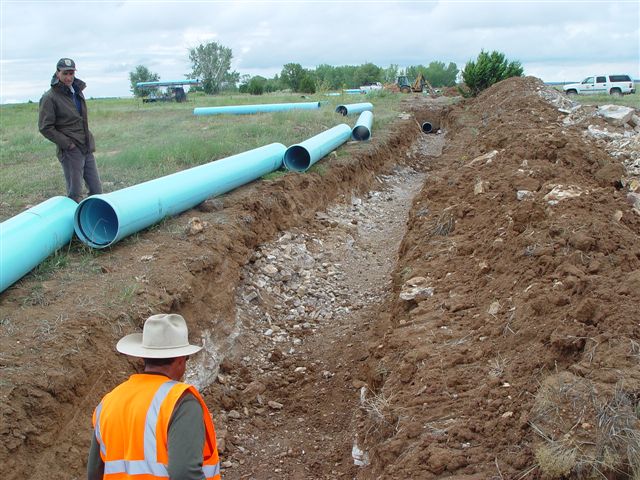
Las Vegas 4

U.S. Fish and Wildlife Service staff and workers from Albuquerque, N.M.-based Deerfield Corp. examine a ditch where new PVC pipes will be placed as part of a Recovery Act project rehabilitating a nine-mile water delivery system and pipeline at Las Vegas NWR in Las Vegas, N.M. The work is part of a Recovery Act project for the refuge.